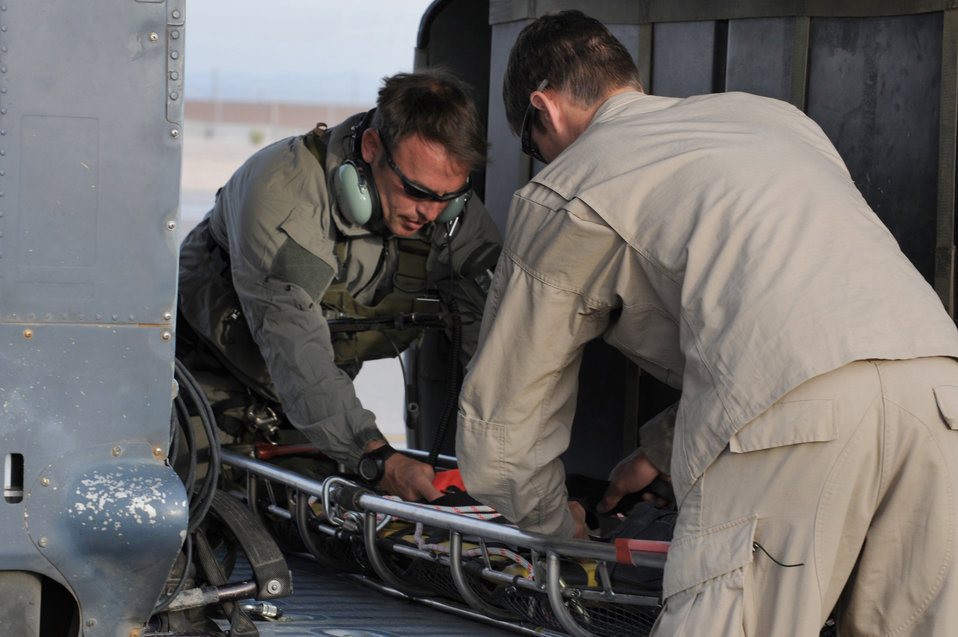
Nellis Airmen locate missing aircraft

Staff Sgt. Jerry Lennon and Senior Airman David Coval make final adjustments to a litter aboard HH-60G Pave Hawk prior to departing for a rescue mission May 1 at Nellis Air Force Base, Nev. Four helicopters and 24 Airmen from the 58th and 66th Rescue Squadrons deployed to assist in the search for a pilot and passenger who were aboard a motorized sailplane that disappeared from radar April 24 in the Sierra Nevada Mountain Range near Mammoth Lakes, Calif.Sergeant Lenon and Airman coval are pararescuemen with the 58th Rescue Squadron.